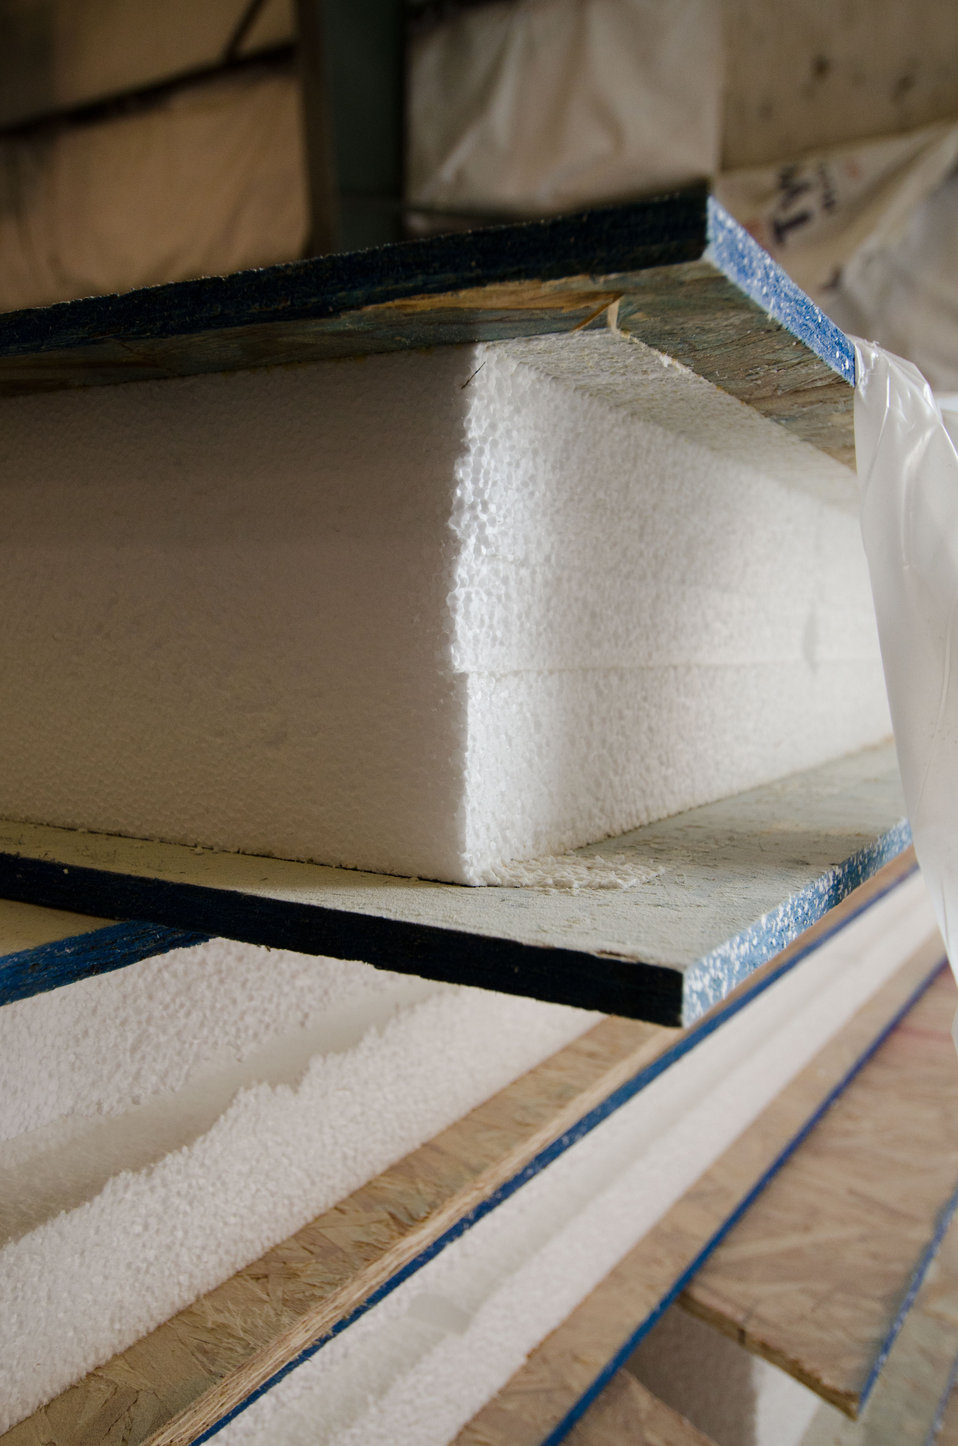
Extra thick foam filled floors and exterior walls add to the climate sealing and energy efficiency of a new type of manufactured home from Stardust Industries on Wednesday, July 13, 2011 in Monticello, KY. They are helping retool and redirect Kentucky’s houseboat manufacturing industry – which has been decimated because of the struggling economy – by using its facilities and manpower to create low-cost housing that is energy efficient. Rural Development obligated $499,000 in Rural Business Enterprise Grant funds to support this unique endeavor. Up until a few years ago, there were several successful houseboat manufacturers in the four-county area surrounding the city of Somerset. Most have now ceased operation or drastically reduced output, which has led to dramatic, long-term job loss. These new energy efficient homes will be constructed in redesigned, refitted houseboat factories using local workers that have been retrained.